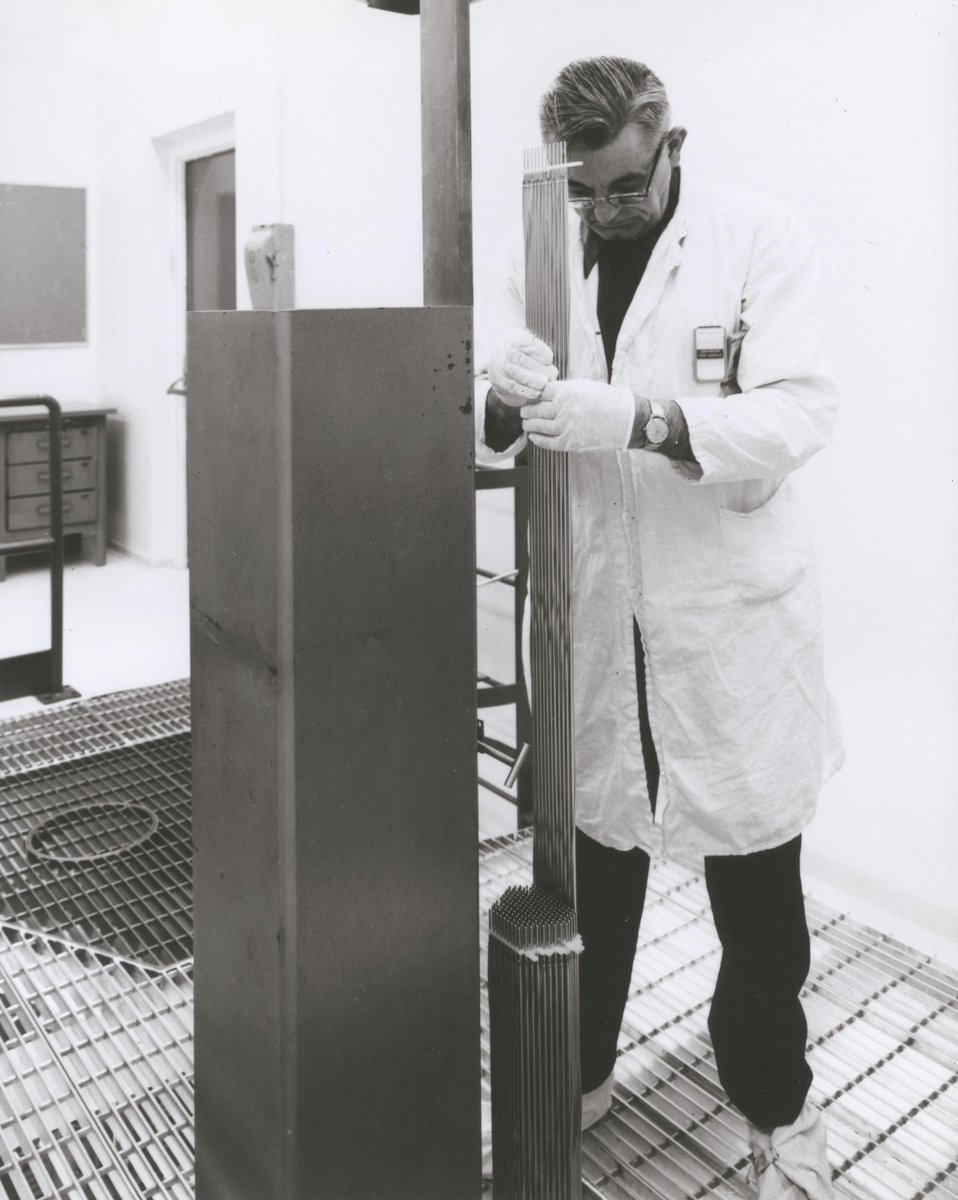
Pins containing mixed oxide fuel are lowered into hexagonal array for the liquid metal fast breeder reactor now under construction at the U.S. Atomic Energy Commission's Hanford Engineering Development Laboratory at Richland, Washington. c. 1971